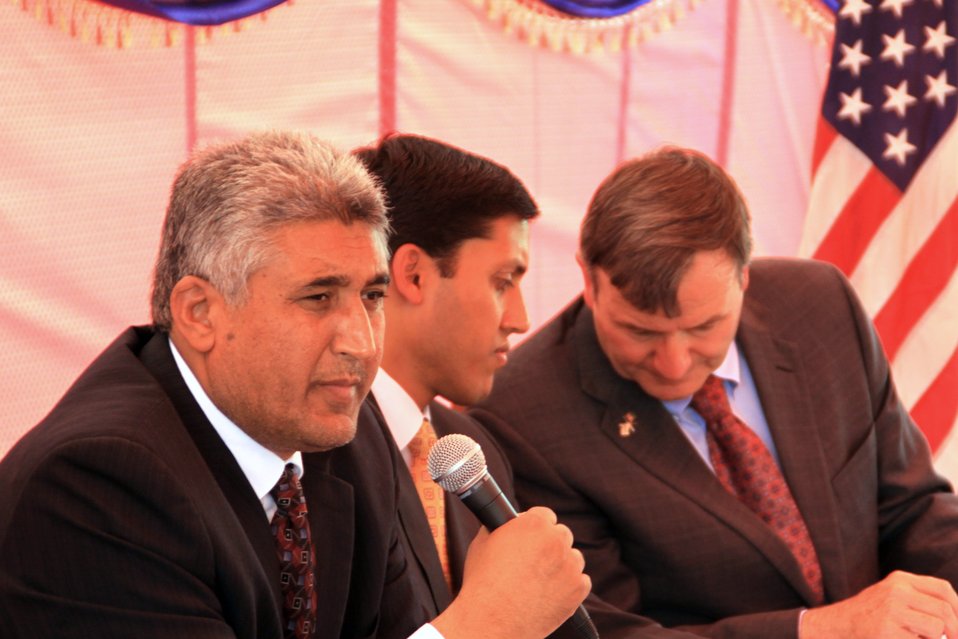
Badam Bagh Farm